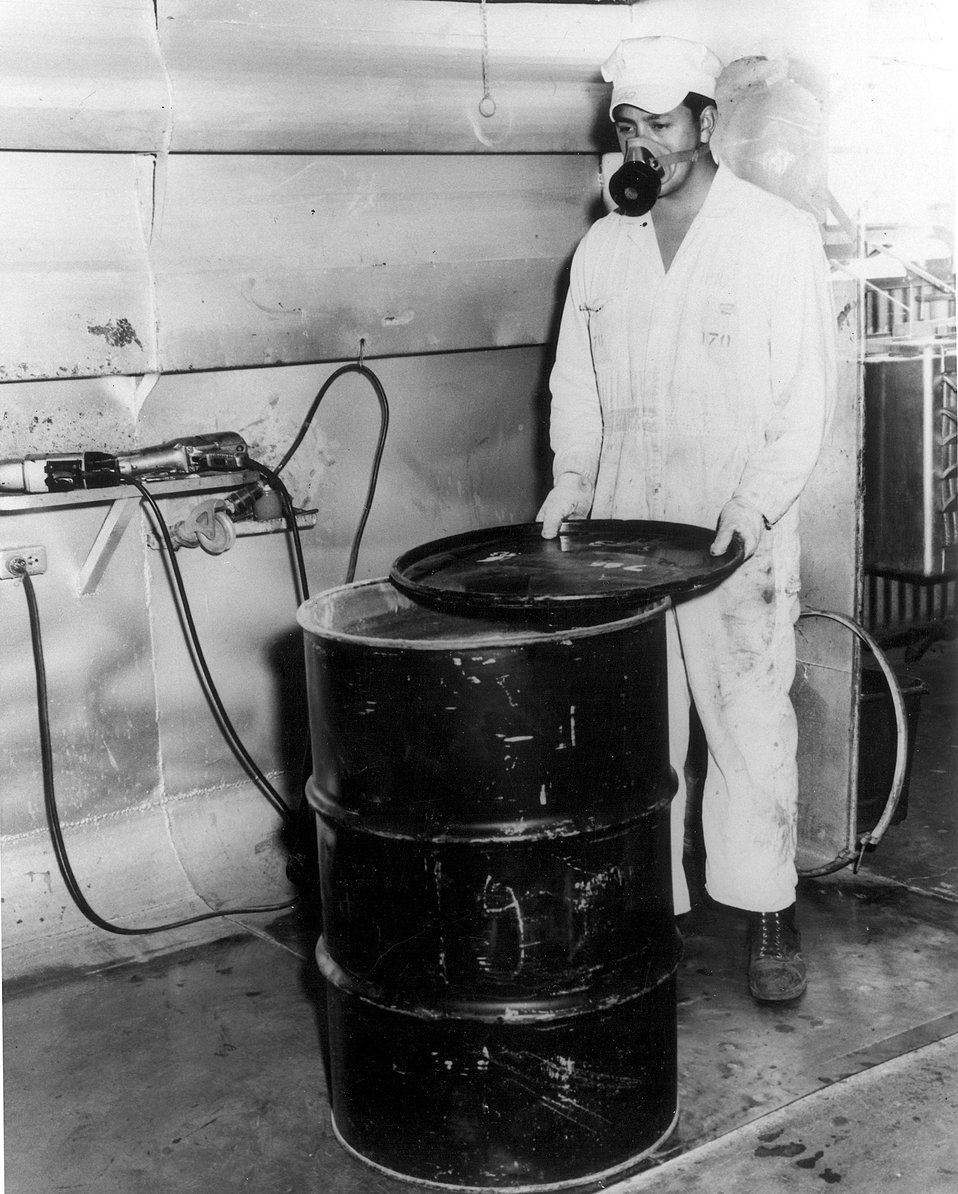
Open drum of uranium concentrate ready for sampling at Grand Junction (Colorado) Office of Energy Research & Development Administration. Material is powdery and bright yellow in color. c. 1968